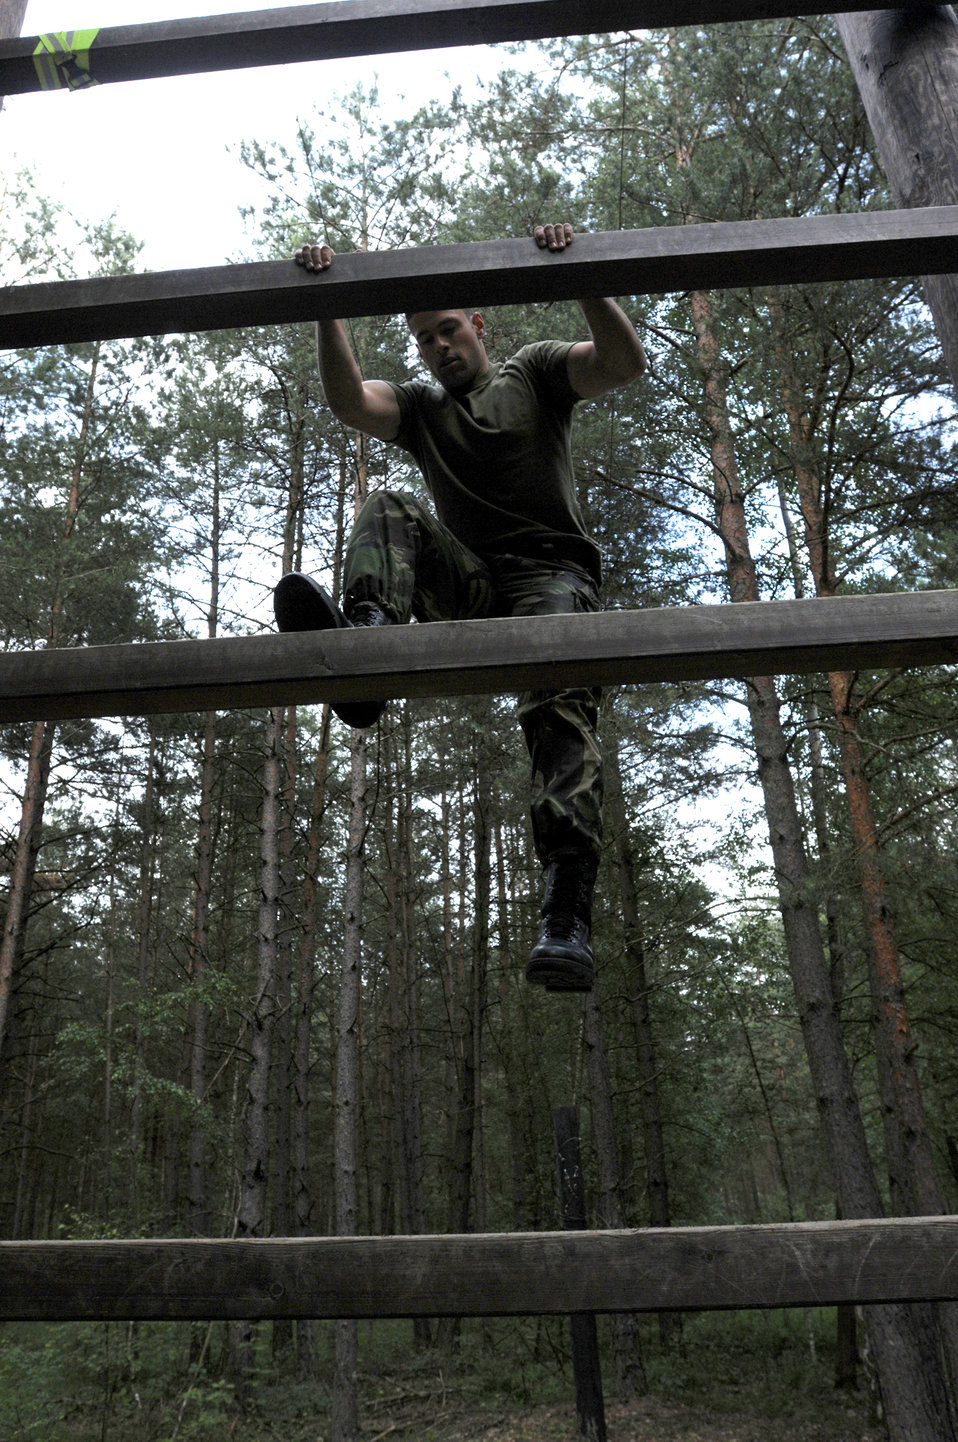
Allied Strike 2011

Portuguese army Lt. Antonio Farinha participates in an obstacle course competition June 23, 2011, as part of Allied Strike at Grafenwoehr Training Area, Germany.